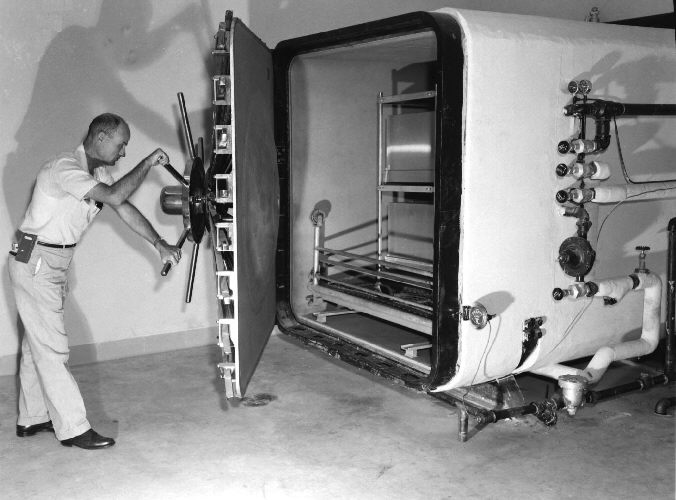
Walk-in autoclave at the CDC Clifton Road facility.